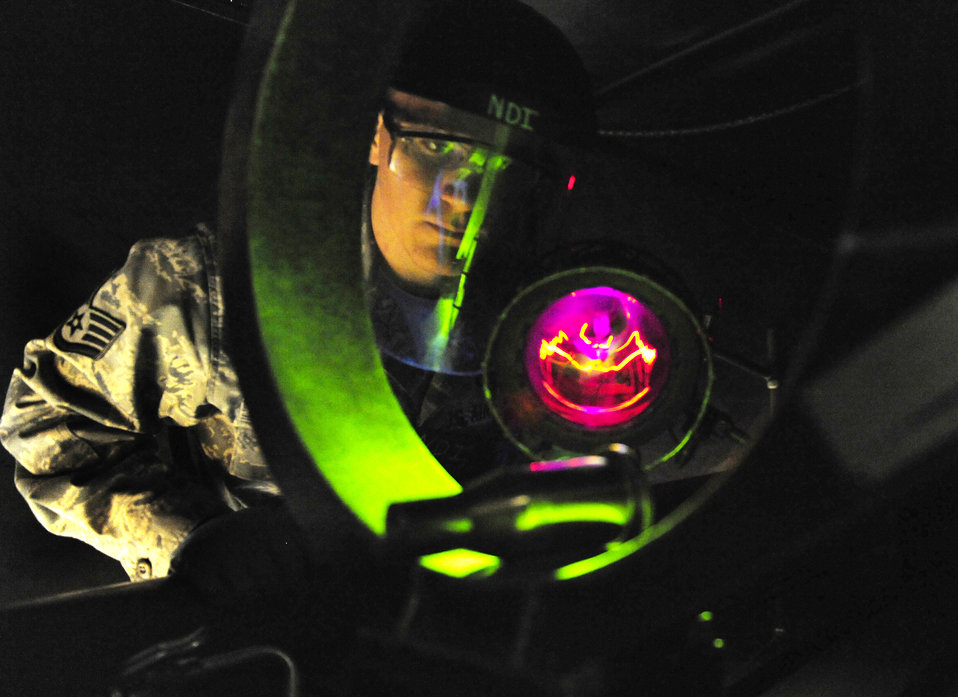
Light it up

Staff Sgt. Zachery Doering checks the integrity of a main thrust pin by performing a magnetic particle inspection Feb. 11, 2010, at Holloman Air Force Base, N.M. A magnetic particle inspection reveals any defects of magnetic items. He is a non-destructive inspection specialist with the 49th Maintenance Squadron.